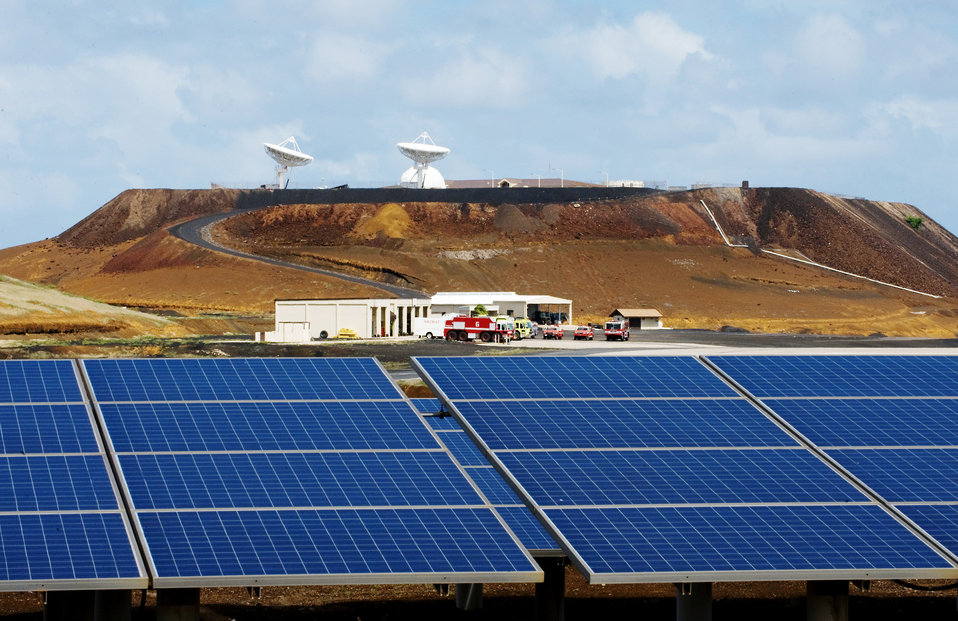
Ascension Island Green Way

Solar panels (left) are the sole source of energy for the runway lights at the 45th Operations Group, Detachment 2, at Ascension Auxiliary Airfield (AAF), South Atlantic Ocean. Ascension AAF's award winning economical self-sufficiency solutions also includes (nearby) wind turbines, drinking water production (center) and (nearby) waste water treatment.